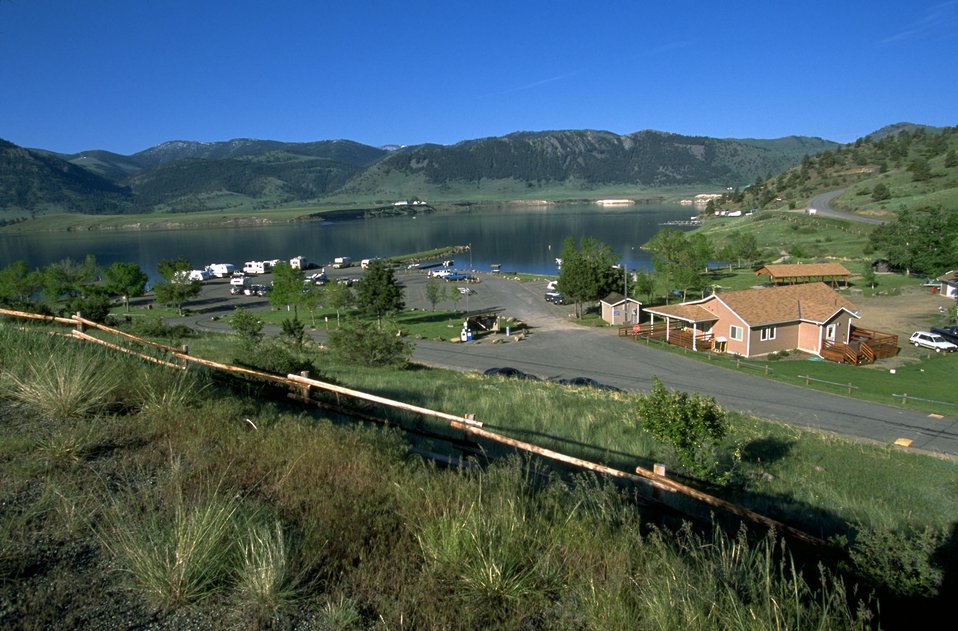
Looking down from a hillside at the administration building at Holter Lake Recreation Site